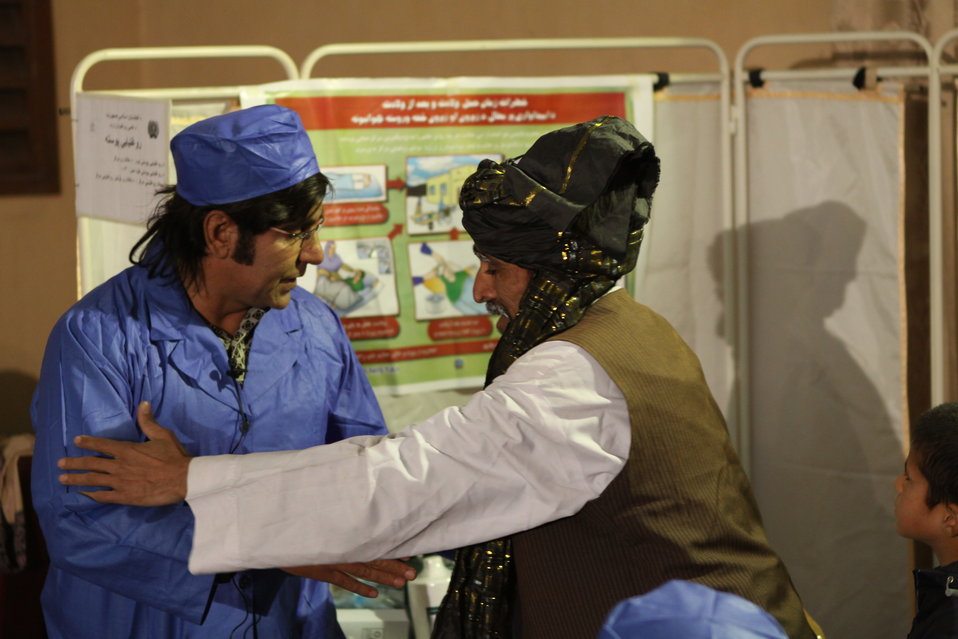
Community Health Workers Celebrated

Kabul, Afghanistan | December 5, 2010 — In support of the United Nations designated International Volunteer Day for Economic and Social Development, Afghanistan’s Ministry of Public Health celebrated its annual Community Health Worker Day today. Acting Minister of Public Health Dr. Suraya Dalil, USAID Senior Deputy Mission Director Robert Hellyer, other government officials, and international donors joined in recognizing the critical contribution of community health workers in Afghanistan and encouraging them to continue their voluntary support to their communities.
The event praised the contributions of the more than 22,000 volunteers throughout the country who deliver community level health-education, counseling, and services out of village health posts located in private homes. The Ministry of Public Health envisioned that community-based healthcare programs will actively encourage communities and families to adopt healthy lifestyles and behaviors, and provide families access to high quality and socially acceptable preventative medicine and life-saving services.
“We have 22,000 community health workers in Afghanistan that are able to implement the basic and standard medicines. They all have been trained through a job description,” said Minister Dalil. Addressing the health workers, she added, “I am proud and feel powerful that I have people like you.”
USAID-funded health projects collaborate closely with the Ministry of Public Health to improve the health and nutritional status of Afghans, provide quality primary healthcare, and promote healthy behaviors at the community and household-levels. USAID supported the training of more than 9,000 of the volunteer community health workers currently working in Afghanistan.
“On behalf of the American people, I congratulate the Community Health Workers for their diligence to gain the skills and knowledge necessary to serve their communities in this important role,” said USAID Senior Deputy Mission Director Hellyer. “USAID strongly supports community based health care and believes that quality community-based health services are essential to reaching Afghanistan’s Millennium Development Goals.”
To support the Basic Package of Health Services, USAID assisted in developing the community health worker training manual, helped train community health worker supervisors and master-trainers, facilitated in-service training, and produced and developed reporting tools, job aids, and education materials.